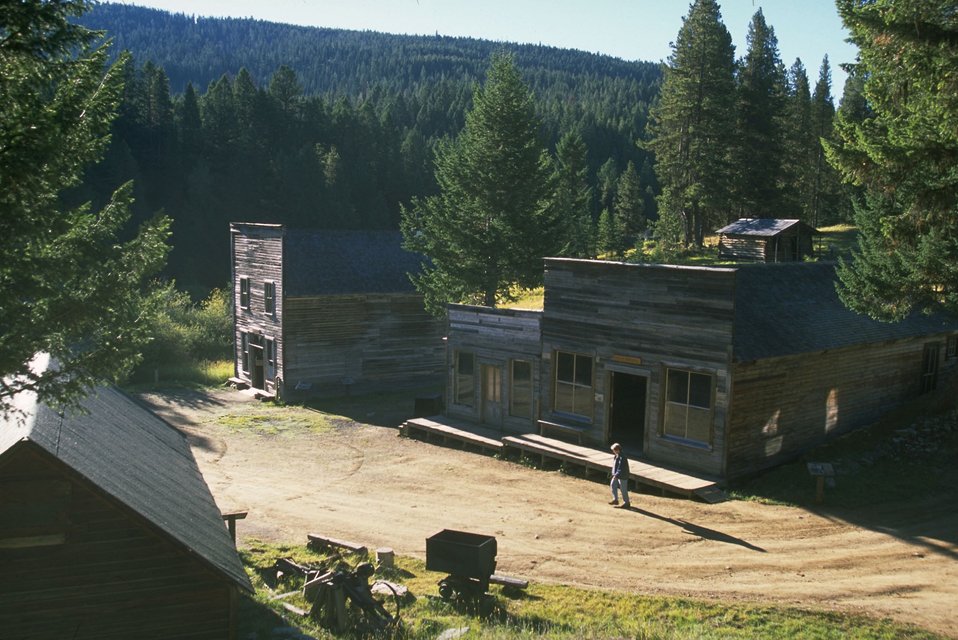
Garnet Ghost Town--Kelleys Saloon left and Davey's Merchantile right